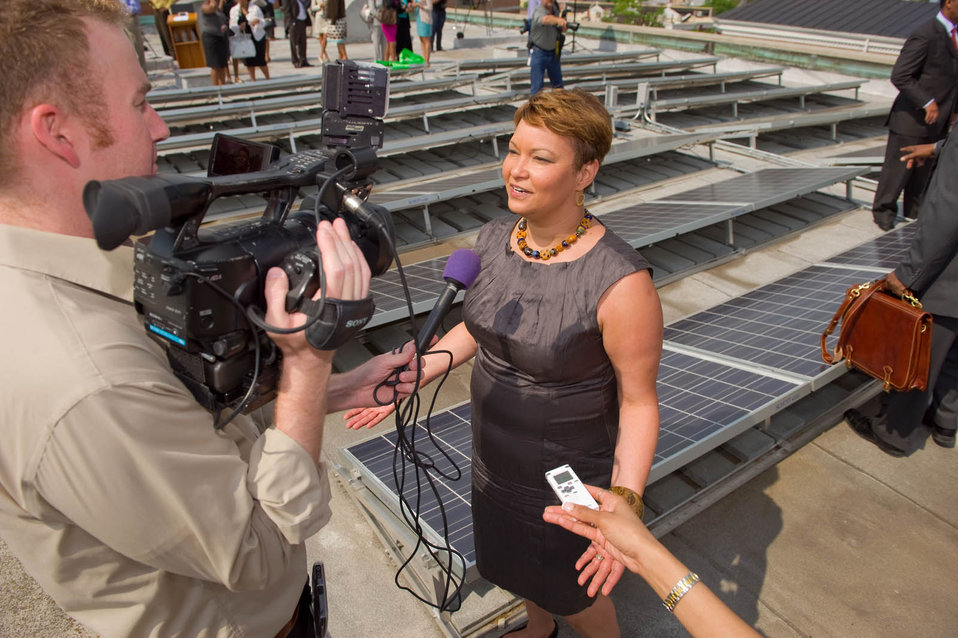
2011-05-03 FlaAveSolar 034